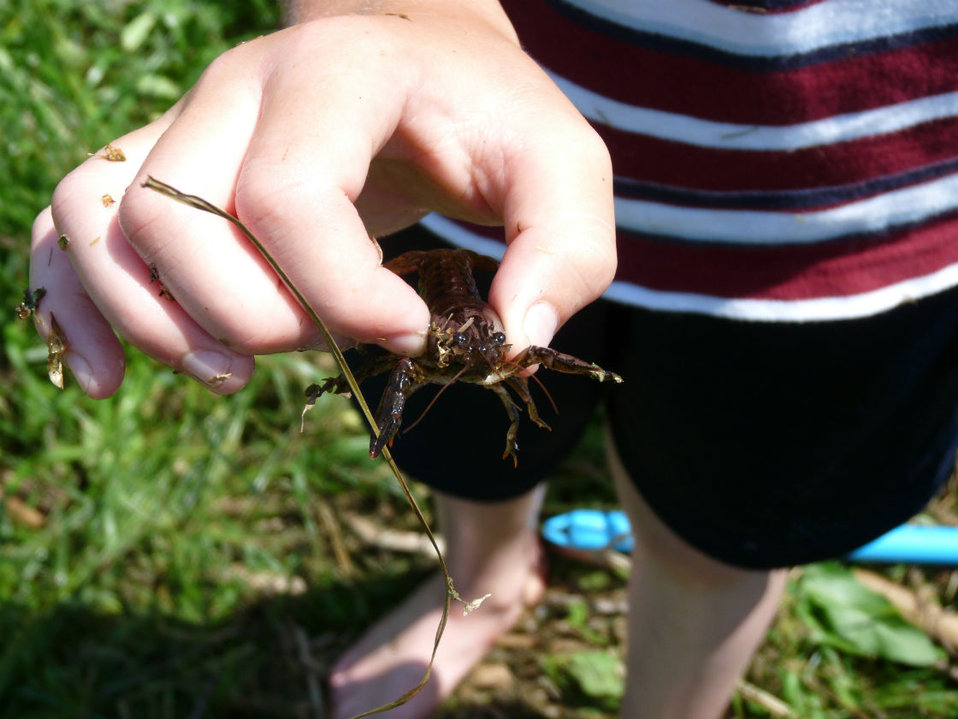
This boy caught a crayfish!

The catch of the day at Rice Lake NWR.